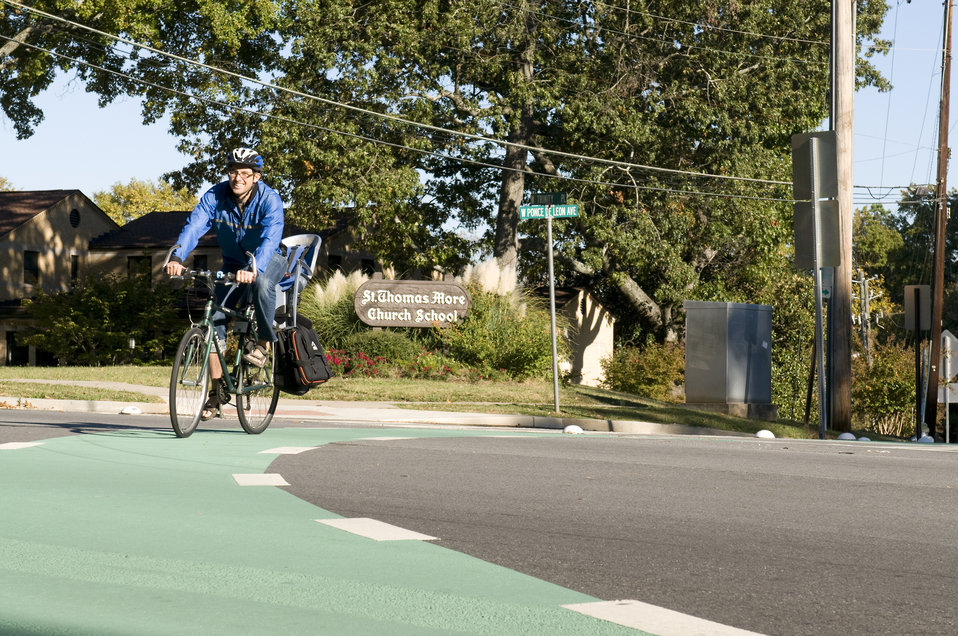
This photograph depicts a male bicyclist, who was riding his bicycle on a sunny Georgia morning. Note the brightly-colored windbreaker he was wearing, which would help drivers see him more easily, as well as the protective, aerodynamic helmet, and the snug leggings, all adding to an overall safer bike ride. Also important, is that he was riding in the designated bicycle traffic lane, and abiding by the proper rules of the road, which govern drivers of both bicycles, and motorized vehicles.Inadequate Use of Helmets